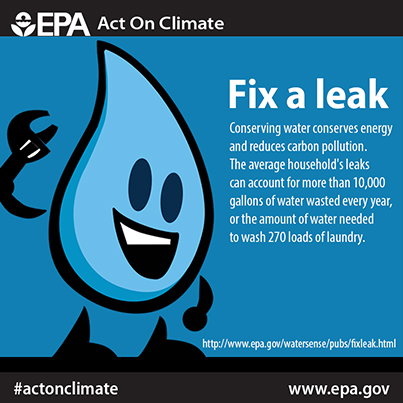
Fix a leak

This just leaked to the press! Fix household leaks and conserve water, energy and #ActOnClimate.